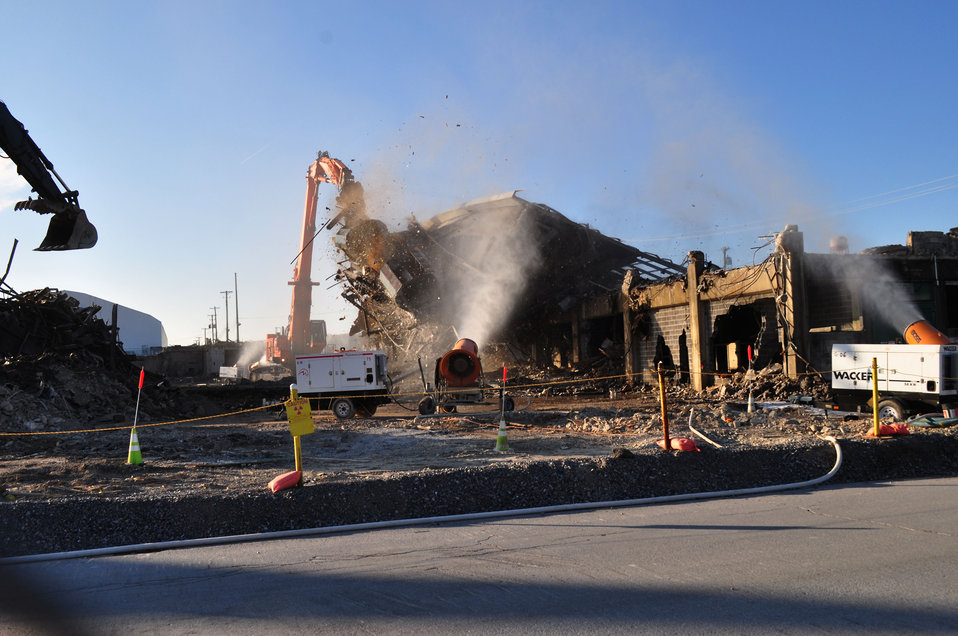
DandD of K-25 North Tower

13-005 DOE photo Lynn Freeny 1-23-2013 ETTP North Tower K-25 Oak Ridge Tennessee